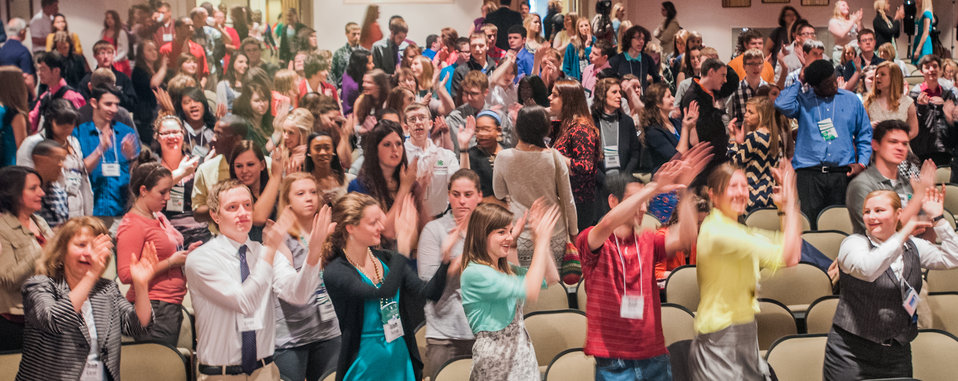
The 4-H youth members, Extension Educators and 4-H Adult Volunteers from across the nation, as well as U.S. Territories, do a dance to pump up the energy before the start of the 2013 National 4-H Conference, on Monday, April 8, 2013 in Chevy Chase, MD. The youth delegates are in grades 10-12 (15-19 years old). The purpose of the conference is to 1) engage 4-H youth in personal development experiences that will increase knowledge, resources, and skills; 2) discuss topics affecting youth and 4-H programming nationwide; and 3) empower and mobilize 4-H youth to create positive social change in their communities in a meaningful and genuine way. The conference also reinforces the rich history of 4-H and its valuable tie to USDA, Cooperative Extension and the Land-Grant University System.